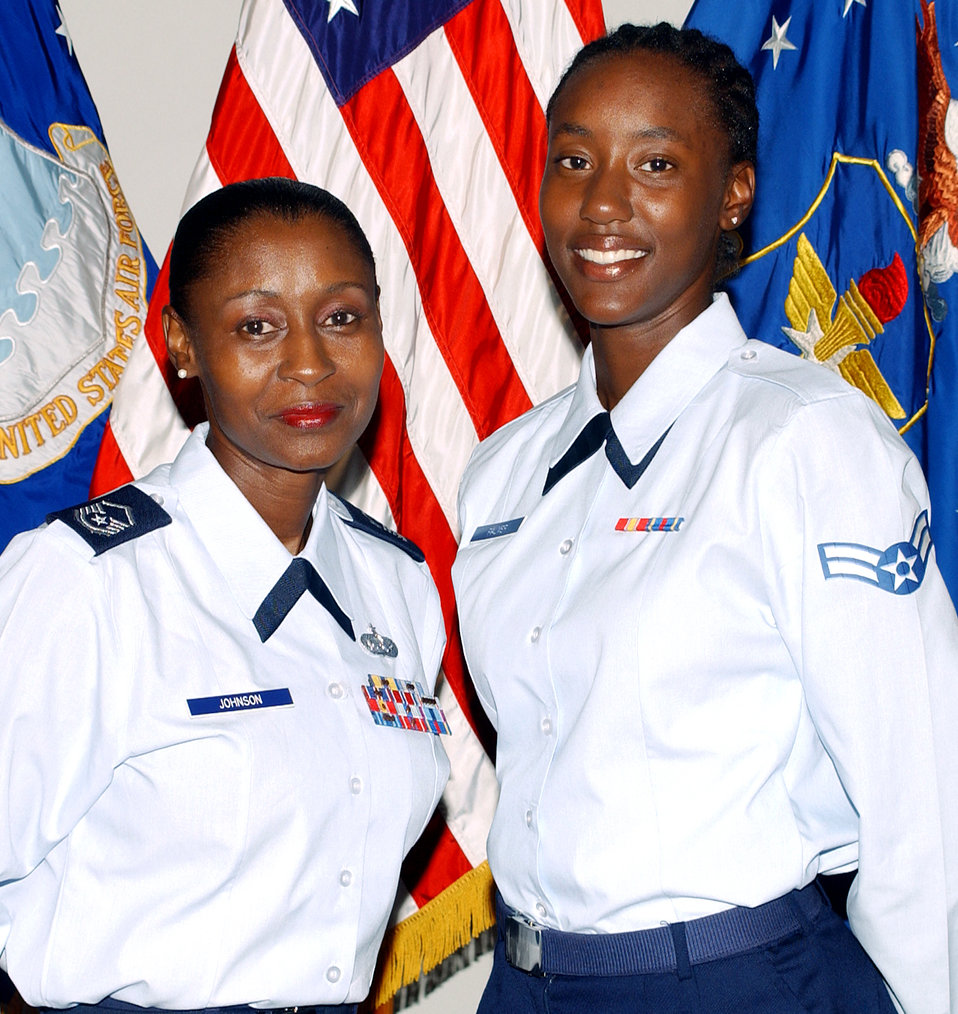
Dual promotions

RANDOLPH AIR FORCE BASE, Texas (AFPN) -- Master Sgt. Sharita Johnson (left) and her daughter, Airman 1st Class Kareema Palmer-Johnson, were promoted together Aug. 1.